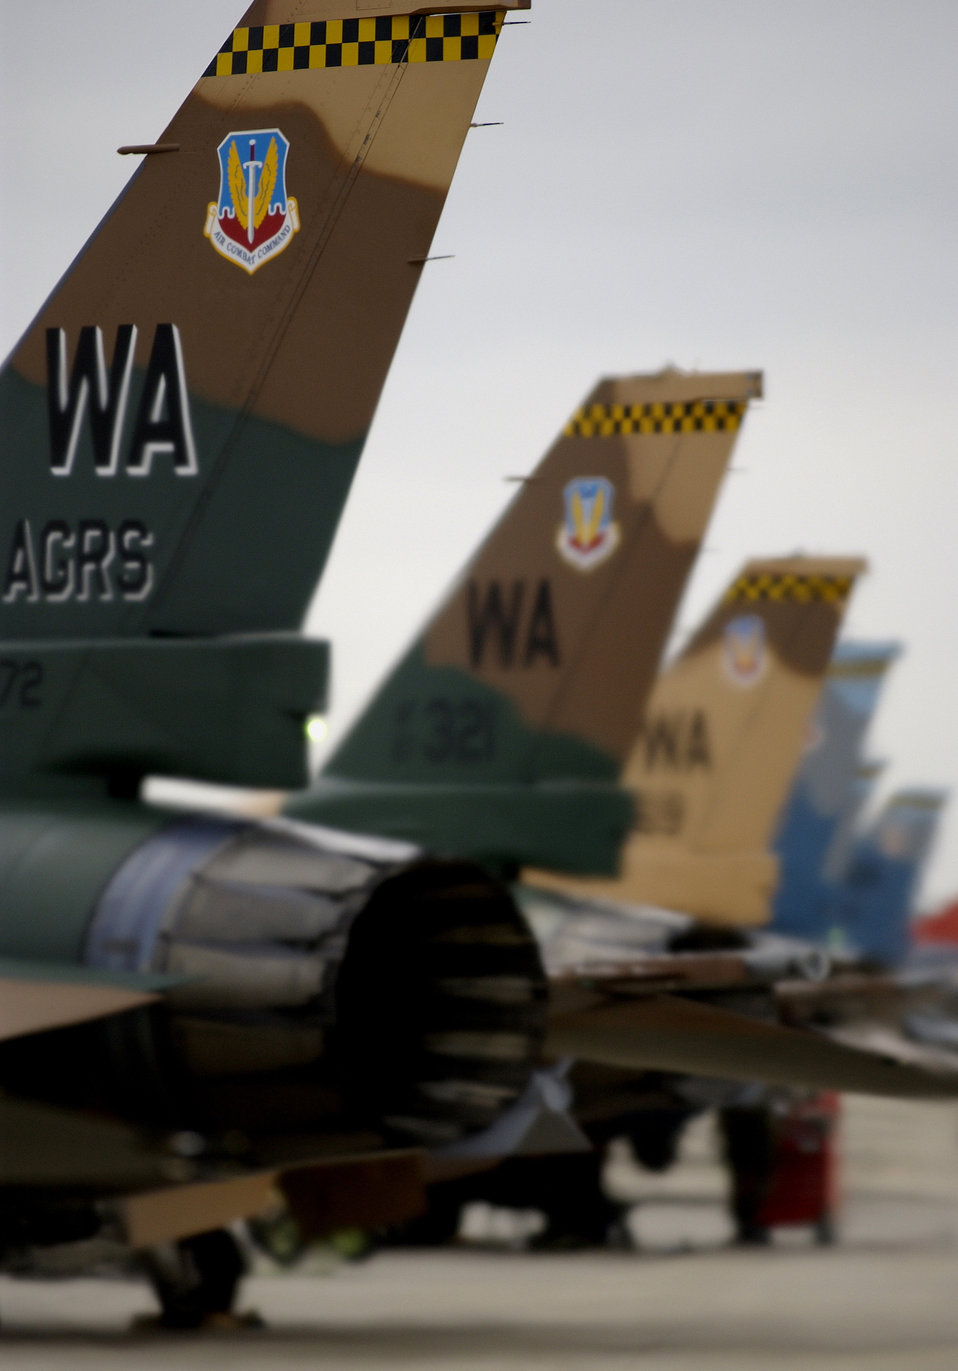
Tail view

TYNDALL AIR FORCE BASE, Fla. -- F-16 Fighting Falcons from the 64th Aggressors Squadron at Nellis Air Force Base, Nev., are lined up ready for action during William Tell 2004 here Nov. 13. This is the 50th anniversary of the William Tell competition, which tests an aircrew's ability to perform under combat conditions. Two weeks of competition will challenge pilots, weapons loaders and maintainers from five F-15 Eagle wings.